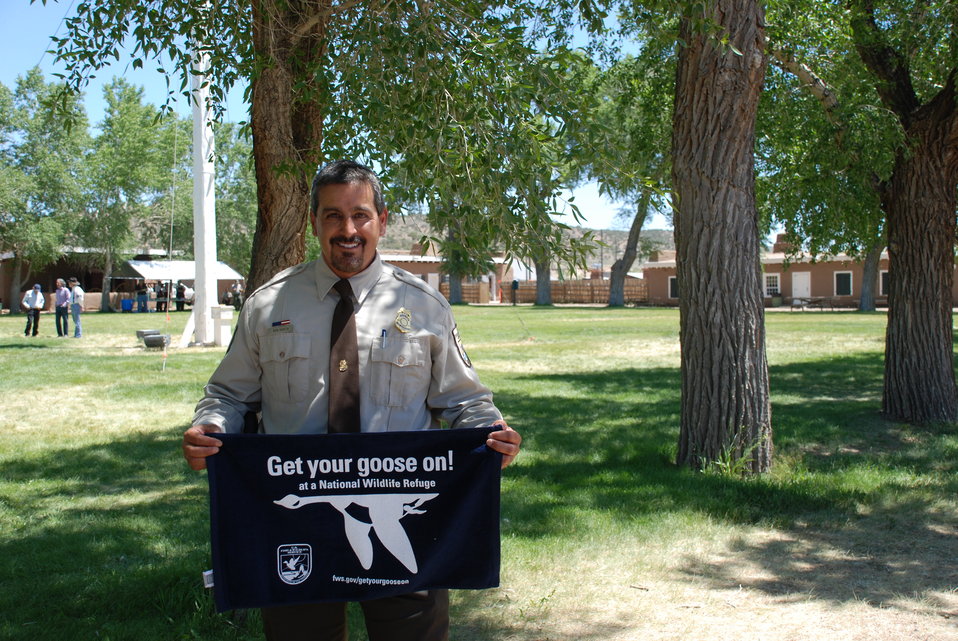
Ron Garcia Gets His Goose On!